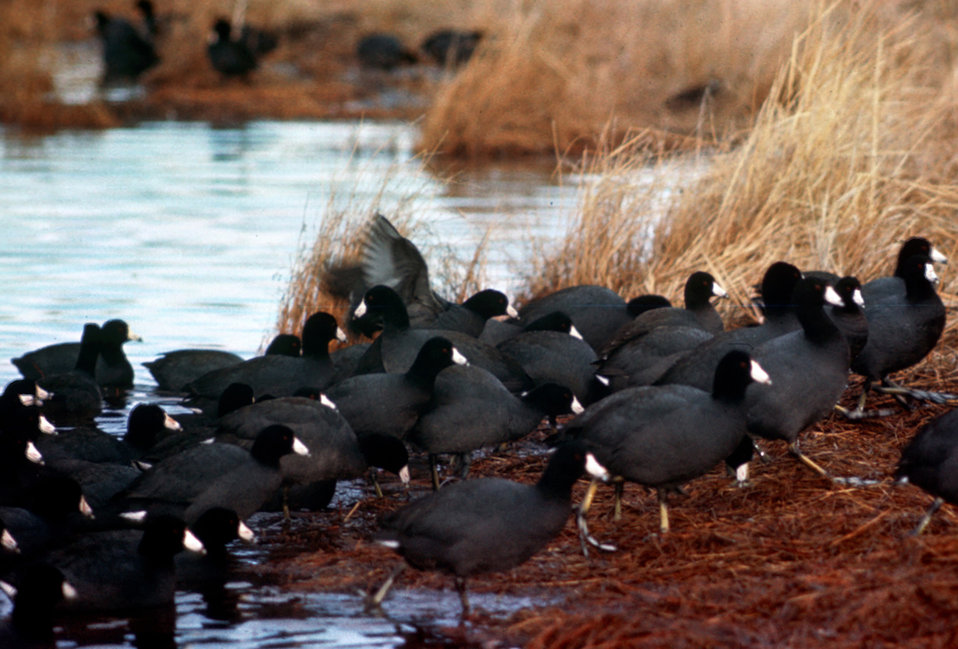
American Coot Flock.